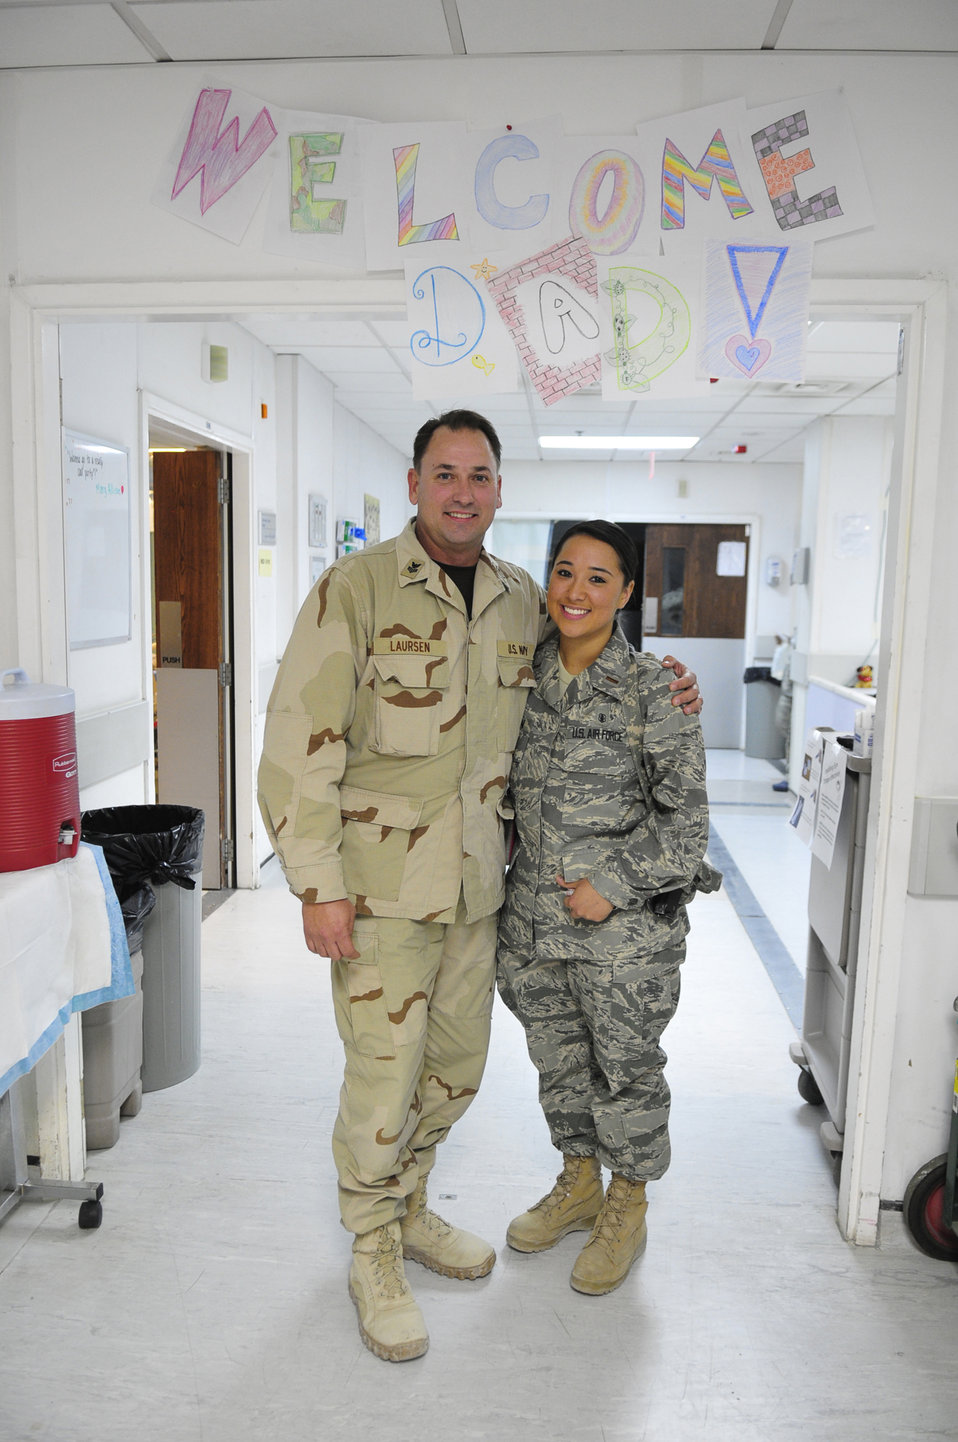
President's Promise

U.S. Air Force 2nd Lt. Andrea Laursen, a registered nurse deployed to the Craig Joint Theater Hospital at Bagram Airfield, Afghanistan, and her father U.S. Navy Hospital Corpsman 1st Class Kevin Laursen hold hands here during a visit, Jan. 4, 2011. The father and daughter servicemembers were able to reunite thanks to a call from President Barrack Obama on Christmas Day in which Seaman Laursen asked for one Christmas Wish, to see his daughter.